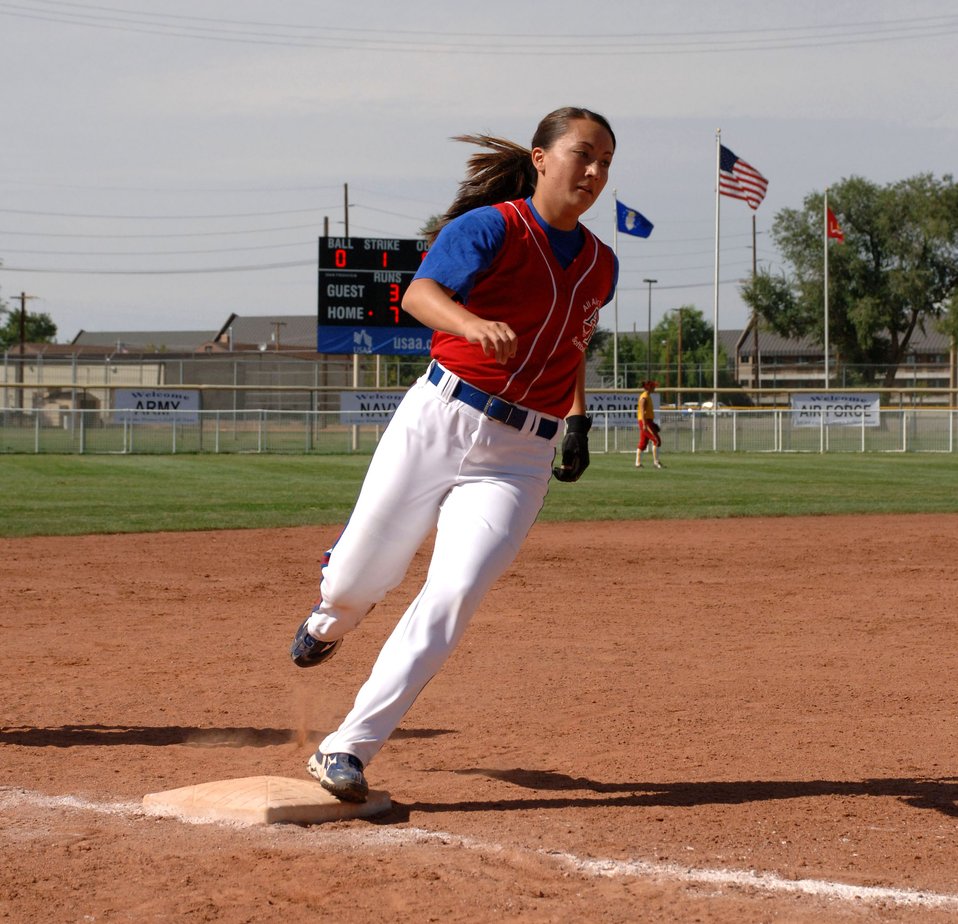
Air Force claims gold in women's softball

Air Force 2nd Lt. Kristina Dempsey rounds third base and looks to score during the All-Armed Forces Women's Softball Championships held Sept. 18 to 20 at Hill Air Force Base, Utah. For the second time in three years, the Air Force team won the tournament.